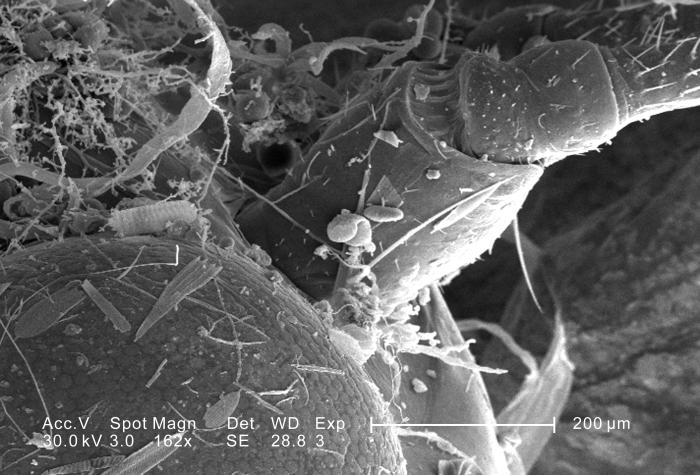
This scanning electron micrograph (SEM) depicted a highly magnified view of a compound eye and antenna on the head of an unidentified green-colored flying insect found outside on the ground in the Decatur, Georgia suburbs; Magnified 162x. The debris covering the organism is mainly vegetative in nature, composed primarily of pollen granules, and disintegrated plant fibers.